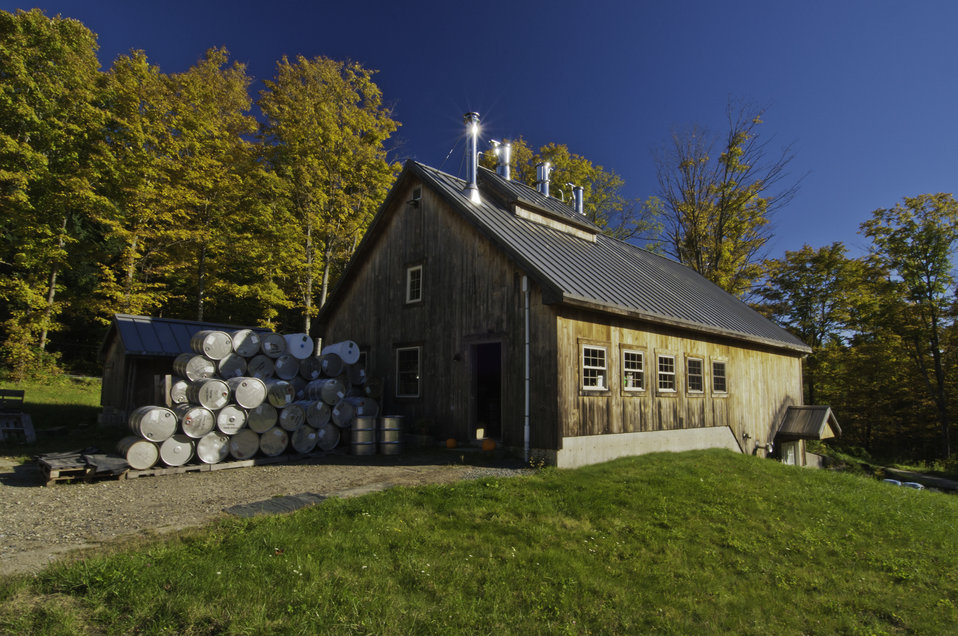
Cabot Hills Maple in Cabot, VT was able to purchase and install a reverse Osmosis system to purify the maple syrup they produce and to improve energy efficiency with a U.S. Department of Agriculture (USDA) Rural Development (RD) Rural Energy for America Program Grant (REAP). This grant provides farmers, ranchers, and rural small businesses the capability to develop renewable energy systems to make energy-efficient improvements to their operations on Sep. 19, 2013.